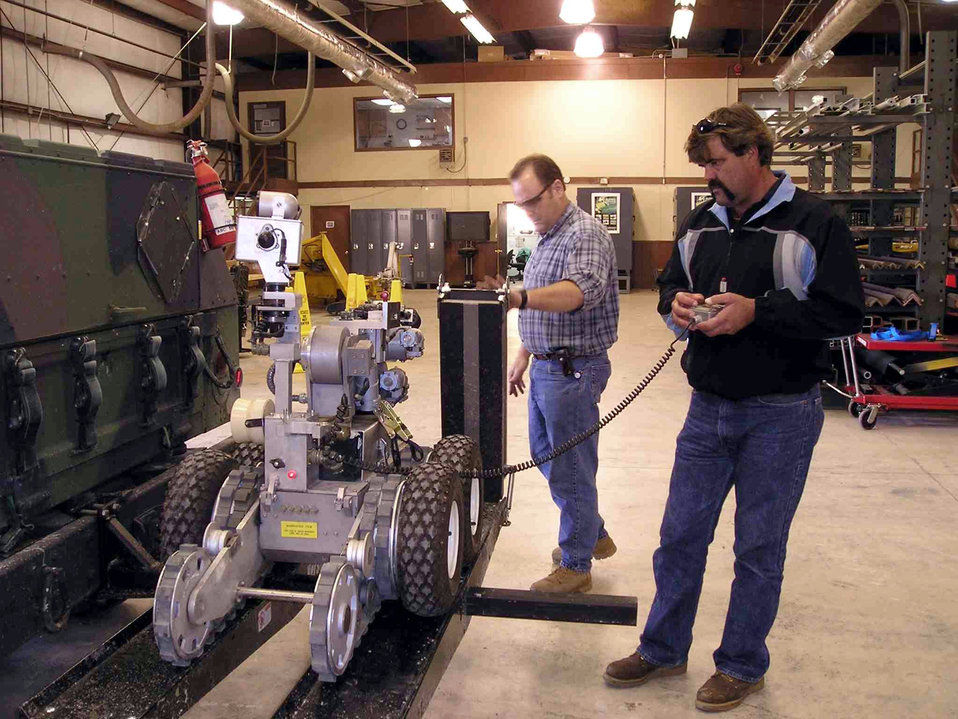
Making robot bumper mounts

TYNDALL AIR FORCE BASE, Fla. -- Darrell Stepp (left) and Marvin Gay drive the Mark VI robot onto the ramp they have mounted on an armored Humvee. Both men work at the materials and manufacturing directorate's force protection branch here.